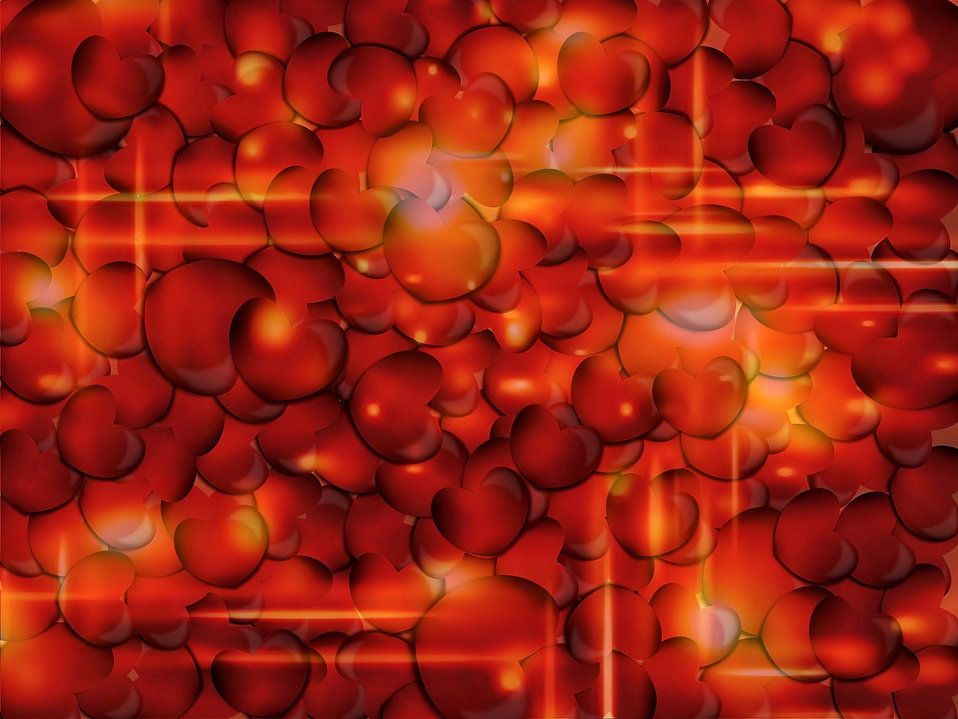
Sun hearts

Background.